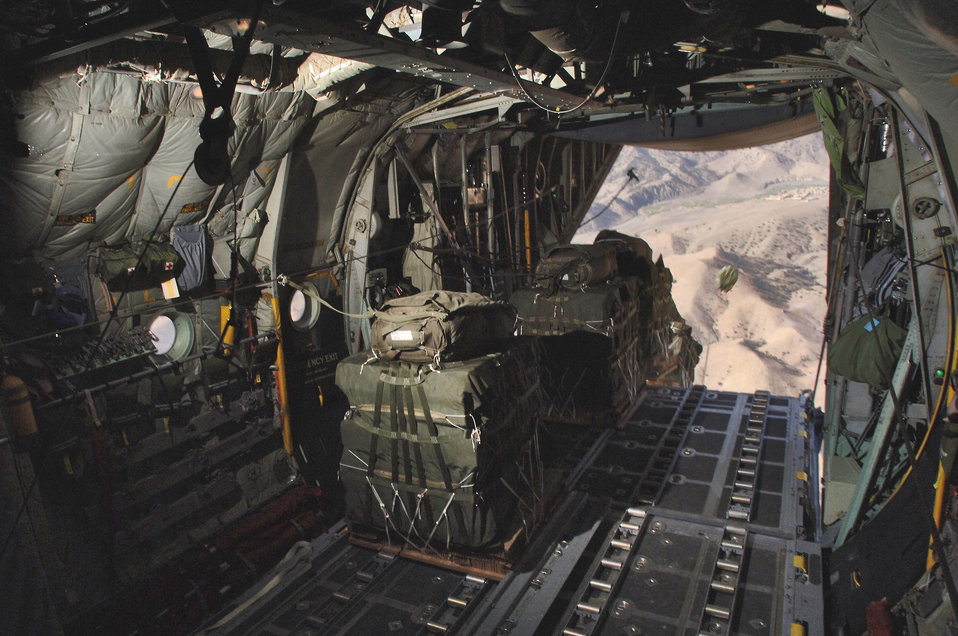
Drop zone

Bundles weighing 2,200 pounds each roll out of a C-130 Hercules during an operational airdrop re-supply mission to deliver 24,000 pounds of supplies to three forward operating bases miles from the Pakistan border Thursday, March 9, 2006. The aircraft is from the Oklahoma Air National Guard's 185th Airlift Squadron at the Will Rogers World Airport, Okla. and deployed to the 774th Expeditionary Airlift Squadron, Bagram Air Base, Afghanistan.